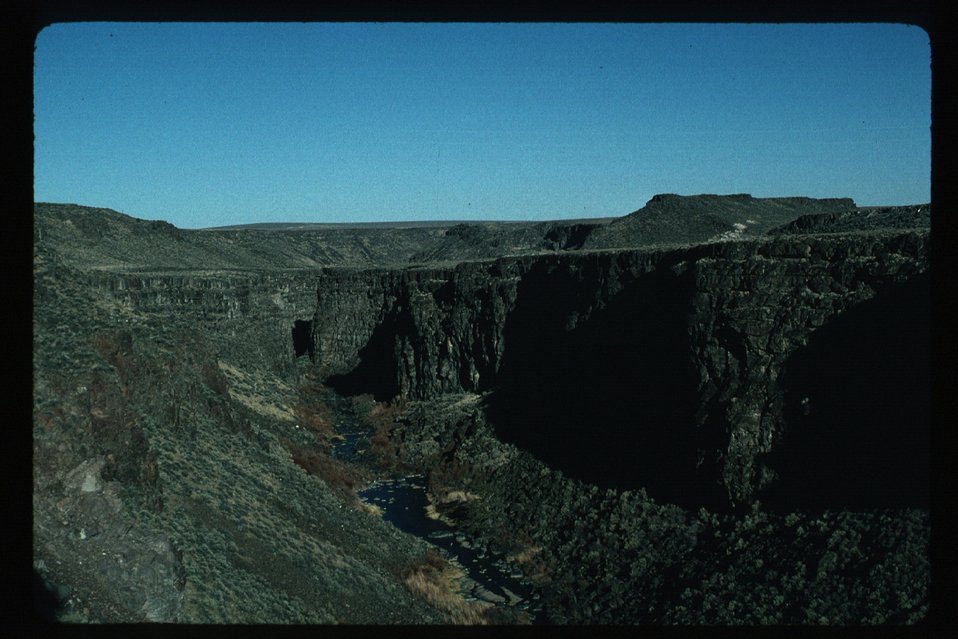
Salmon Creek Canyon Riparian Salmon Field Office USRD Upper Snake River District